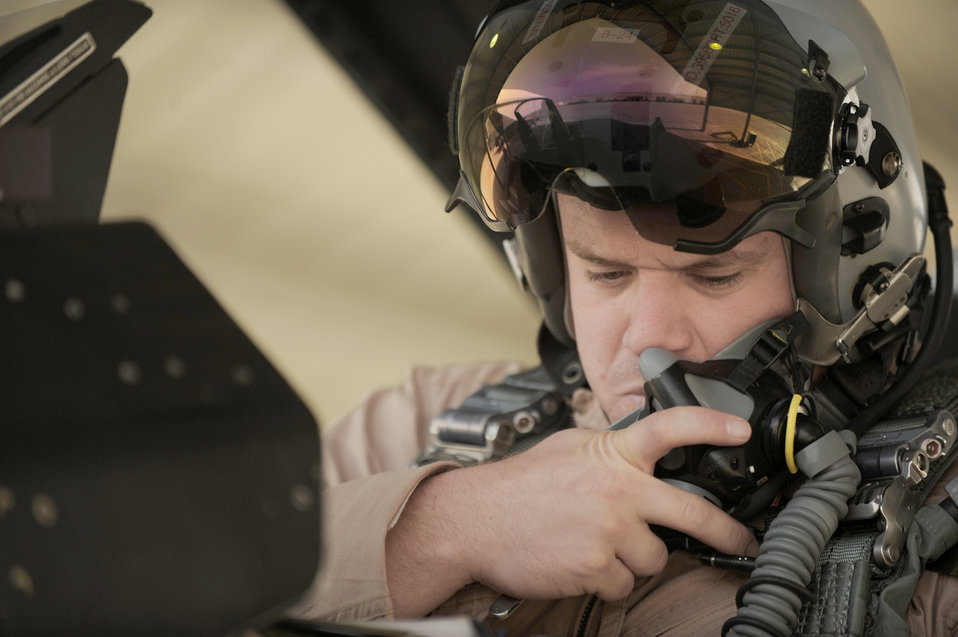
U.S., Jordan commence exercise

Capt. Ryan Wilmes prepares an F-16 Fighting Falcon for takeoff Oct. 18, 2010, as part Falcon Air Meet 2010 at Azraq Air Base, Jordan. Captain Wilmes is assigned to the 77th Fighter Squadron from Shaw Air Force Base, S.C.